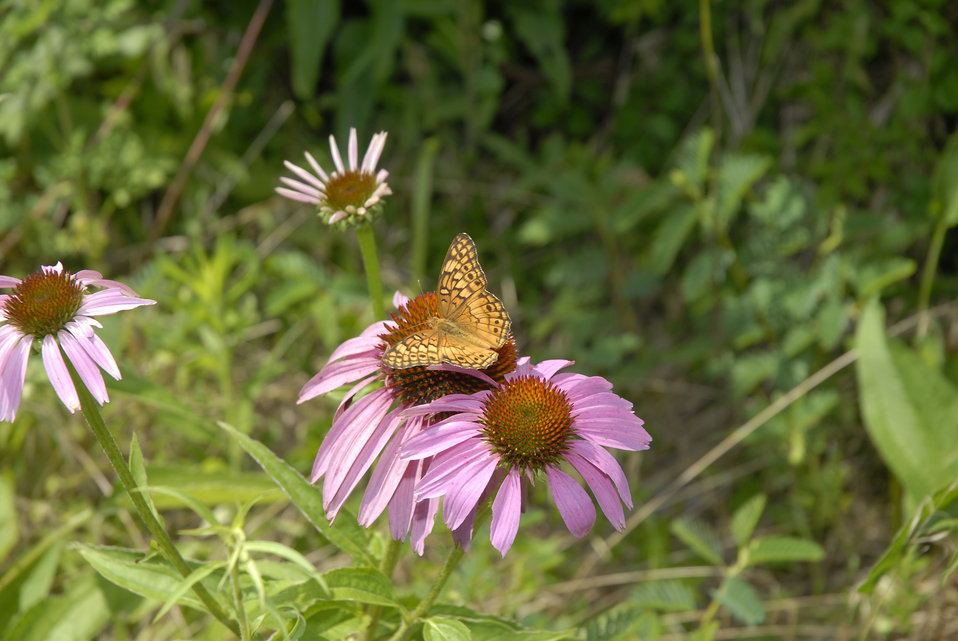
The U.S. Department of Agriculture (USDA) Natural Resources Conservation Service (NRCS) Conservation Effects Assessment Project (CEAP-Wetlands) study of the Chesapeake Bay concentrates on the ecological benefits of conserving wetland areas in Delaware on July 7, 2008. Wetlands provide significant ecosystem services that include floodwater storage, water quality improvement, biodiversity support, and wildlife habitat. Certain practices are aimed specifically at maintaining or restoring wetland ecosystem services.